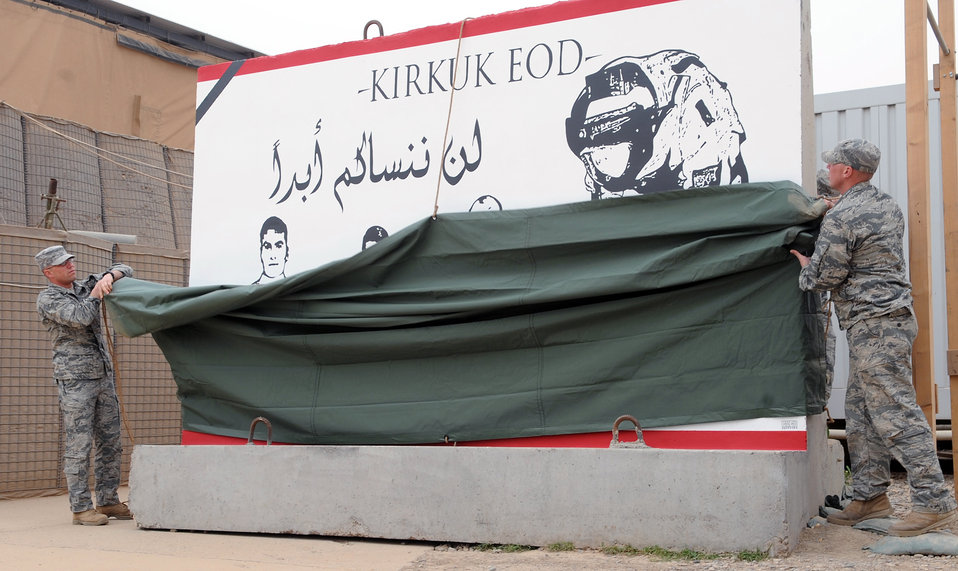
Airmen unveils memorial, raise money to honor families of fallen Iraqi comrades

Members of the 506th Civil Engineer Squadron explosive ordnance disposal team memorialize three Iraqi police counter-explosive team members killed by an Aug. 12, 2009, vehicle-borne improvised explosive device by unveiling a mural painted in their honor Feb. 23, 2010, at the EOD compound at Kirkuk Air Base, Iraq. The families of the fallen were presented donated funds raised during an EOD bomb suit run.